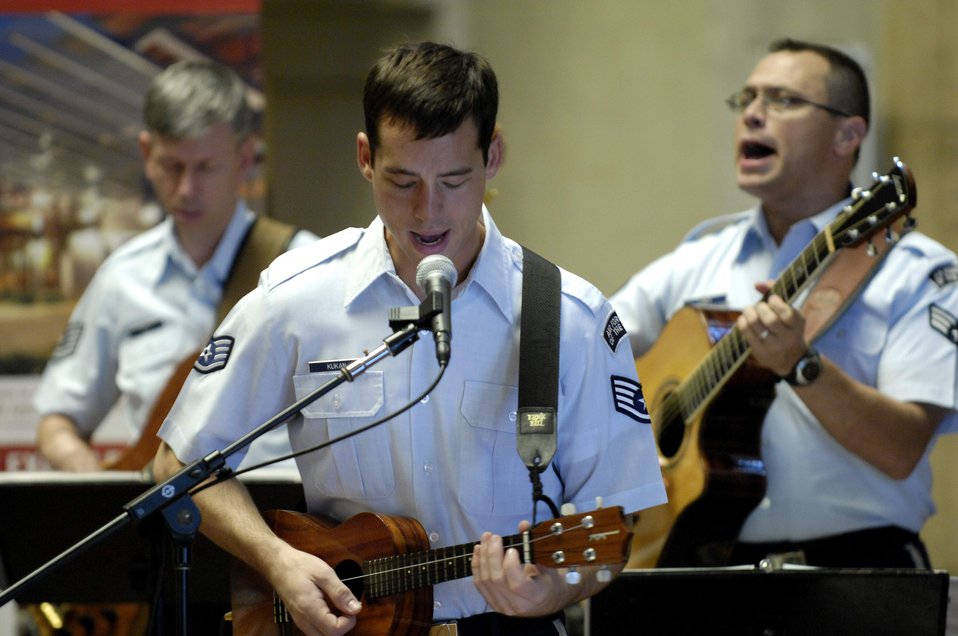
Air Force Week Honolulu kicks off

Members from the Air Force Band of the Pacific Hana Hou perform prior to the Air Force Week proclamation announcement Sept. 9 at the Honolulu Hale in Hawaii. Mufi Hannemann, mayor for the city and county of Honolulu, proclaimed Sept. 7 through 15 as Air Force Week in Honolulu.